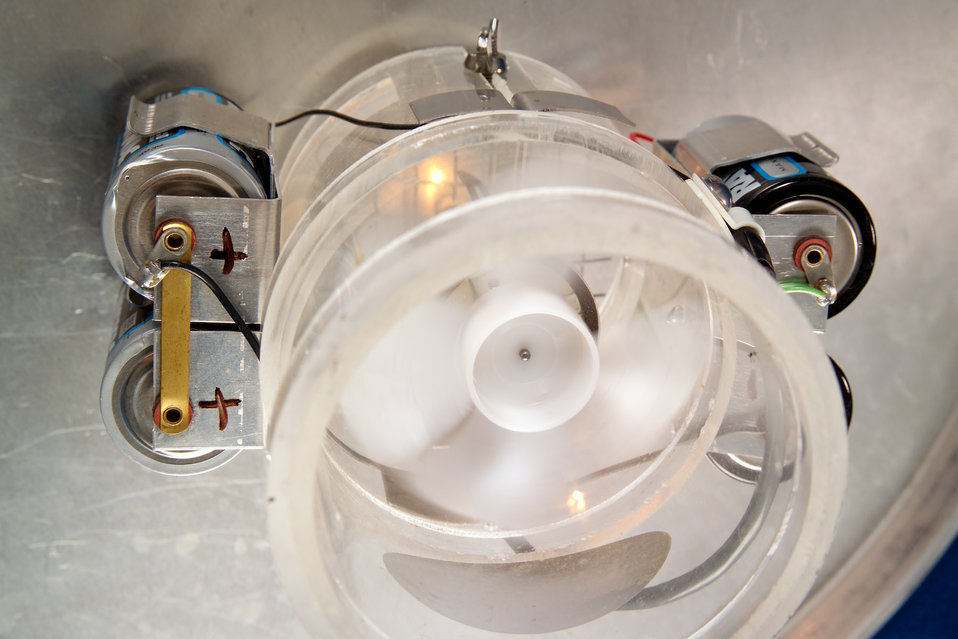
This is a disassembled light trap used to trap mosquitoes tested for the presence of pathogens.